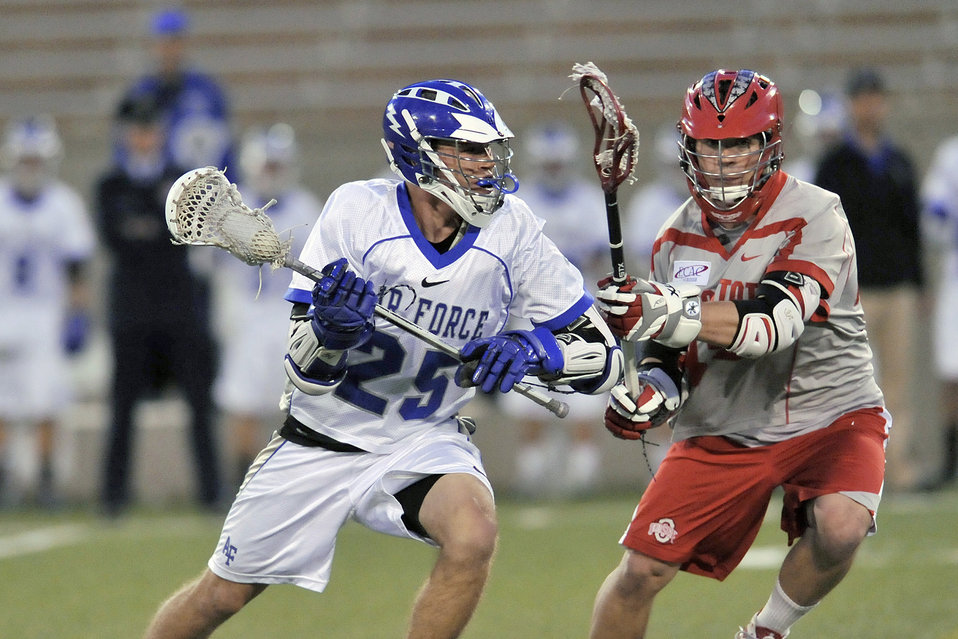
Falcons vs. Buckeyes

Falcons freshman midfielder Erik Smith advances against the Ohio State Buckeyes April 17, 2011, at Falcon Stadium in Colorado Springs, Colo.